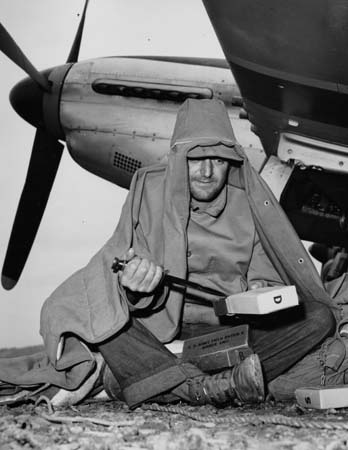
Veterans visited Iwo Jima

Crew Chief Staff Sgt. Anthony Belesi, cuts open dry K-rations huddled under a canopy blanket beneath the Wing of his 7th Air Force P-51 fighter on Iwo Jima. Mechanics remained on the flight line 14 hours from dawn to dark with no shelter.